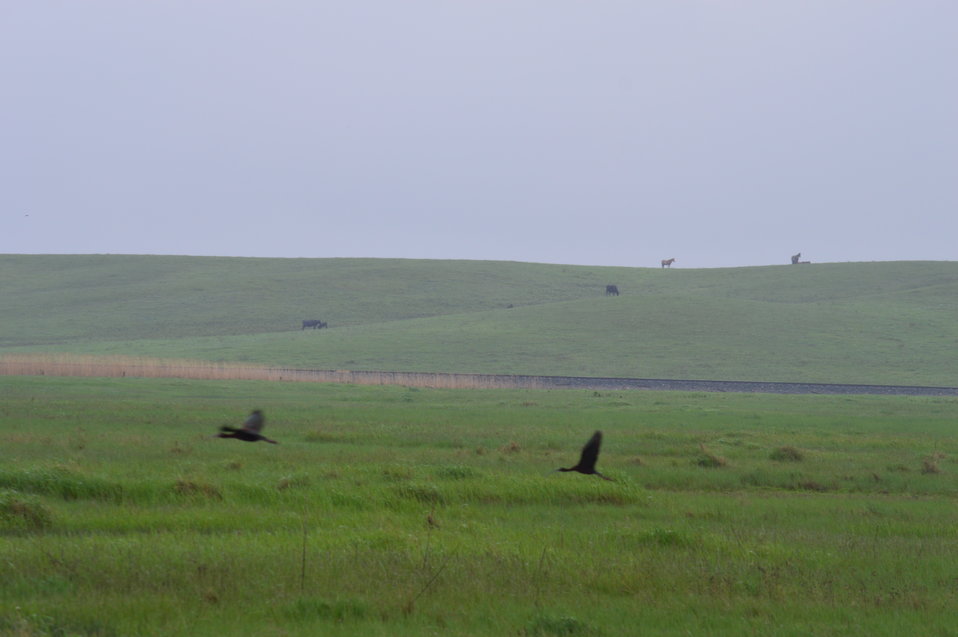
Lost Lake NWR

Scenery and wildlife at Lost Lake National Wildlife Refuge in North Dakota.